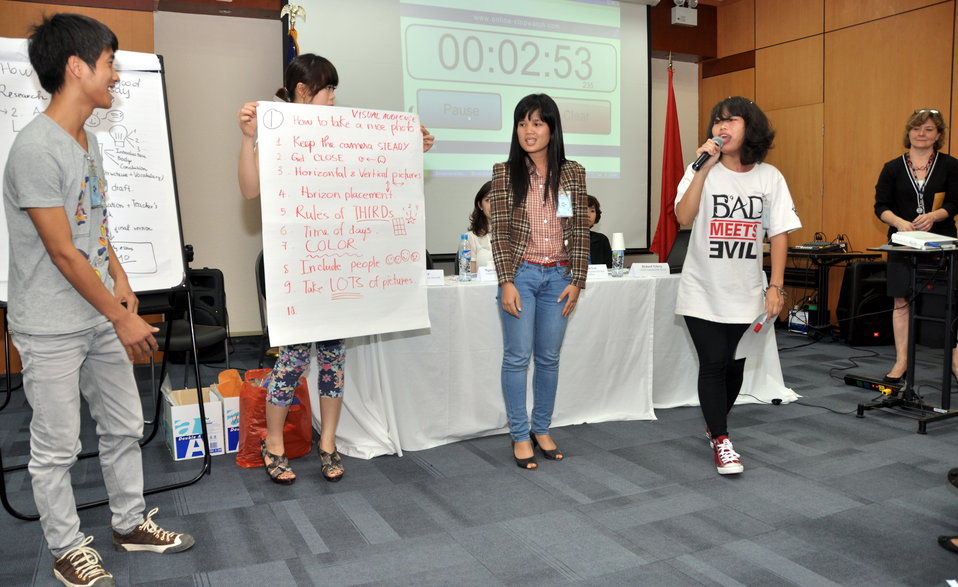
Students join the ‘USAID and Higher Education in Vietnam’ talk

Photo: @USAIDVietnam, November 19, 2012